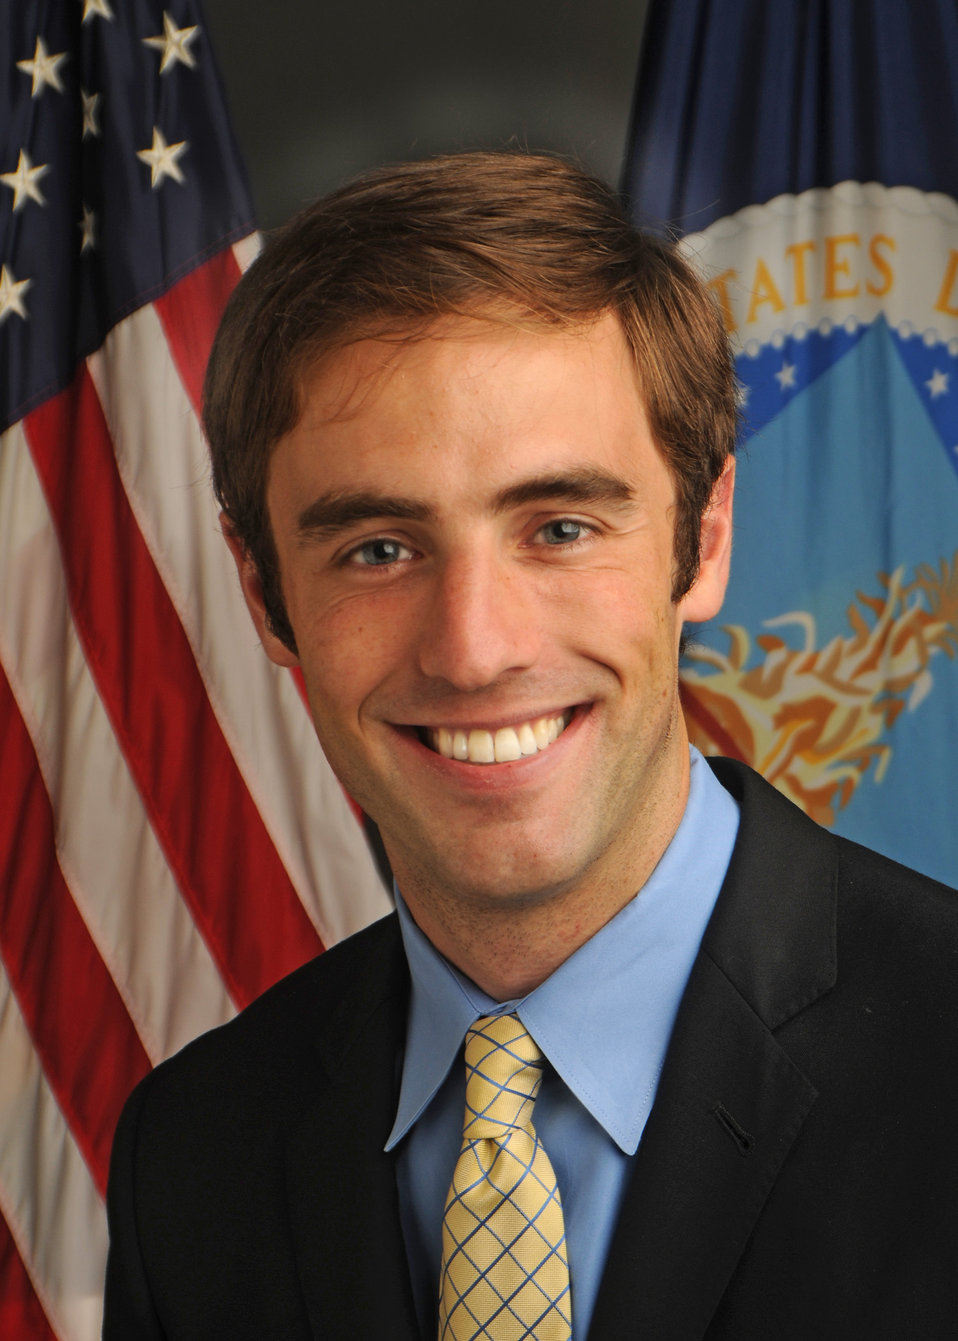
10di1108-0004 Assistant to the Under Secretary Marketing and Refulatory Programs (MRP) Luke Knowles

Portriat Assistant to the Under Secretary Marketing and Regulatory Programs (MRP) Luke Knowles.